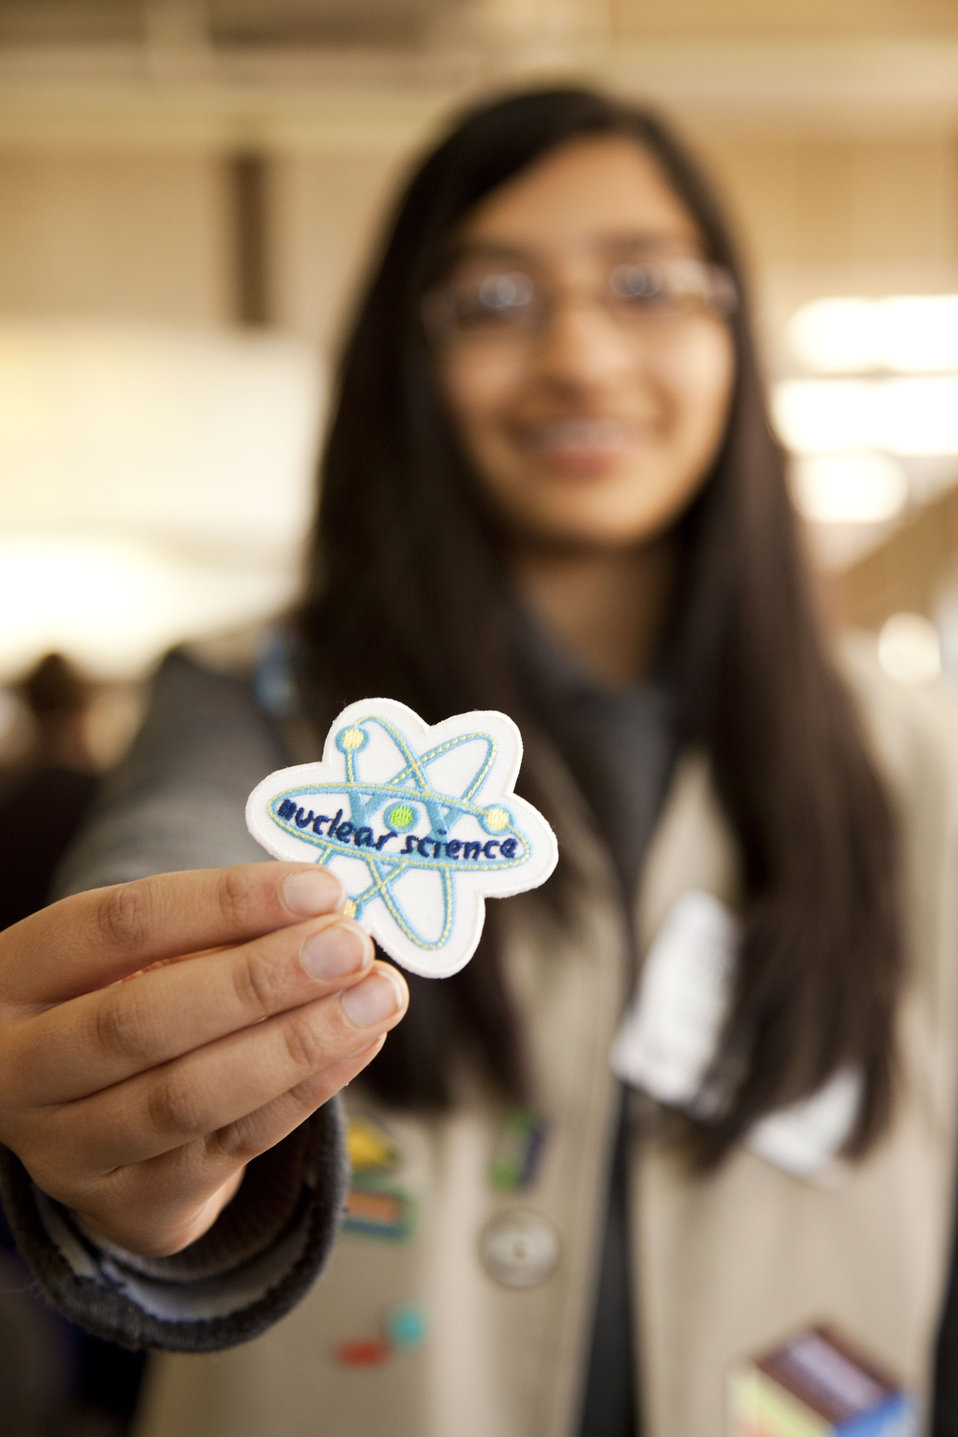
A Girl Scout shows off the merit patch she received in her nuclear science class.